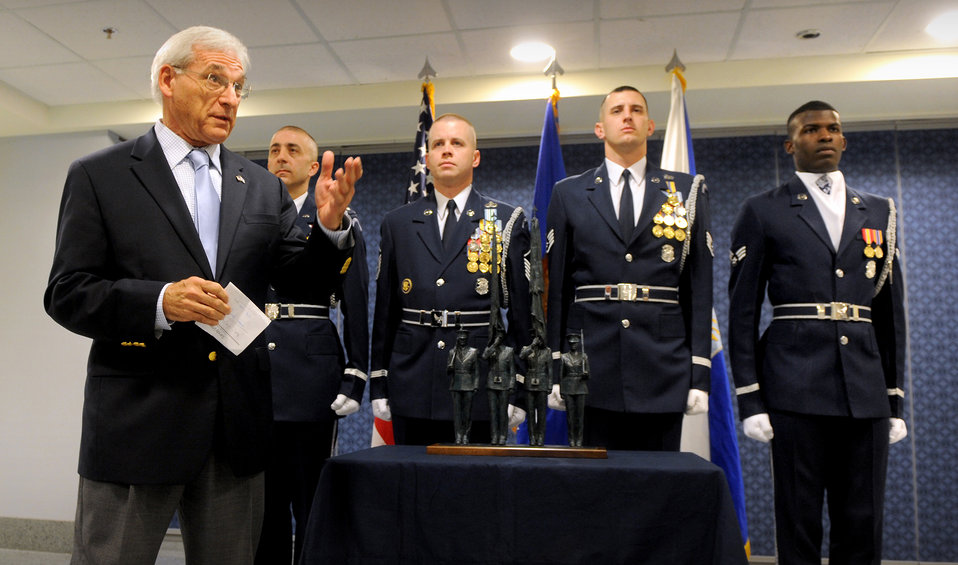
CSAF accepts honor guard statue

Air Force Association Chairman of the Board of Directors Sandy Schlitt presents a statue depicting the U.S. Air Force Honor Guard to the Air Force during a ceremony in the Pentagon, Washington, D.C., on April 13, 2012. Air Force Chief of Staff Gen. Norton Schwartz accepted the statuette—a replica of the honor guard sculpture at the Air Force Memorial—on behalf of the service. Standing at attention behind Schlitt are, from left, Lt. Col. Ken Marentette, Master Sgt. Matthew Lewis, Staff Sgt. Jesse Schierloh and Senior Airman Billy Degraffenreid, all members of the U.S. Air Force Honor Guard at Joint Base Anacostia-Bolling, D.C.